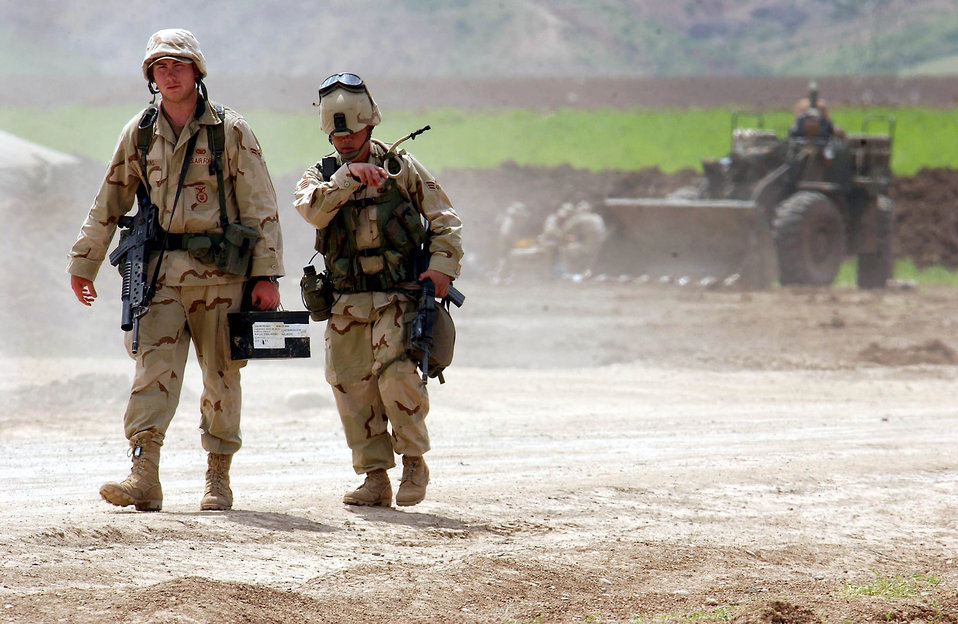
On patrol

OPERATION IRAQI FREEDOM -- Airman 1st Class Shawn Rankin (left) and Senior Airman Marcus Mindoro try to avoid the dust as they walk to their post at Bashur Airfield, Iraq. Rankin deployed from the 100th Security Forces Squadron, Royal Air Force Mildenhall, England, to serve with the 86th Expeditionary Contingency Response Group, which operates the airfield. Mindoro is with the 569th U.S. Forces Police Squadron, Ramsein Air Base, Germany.